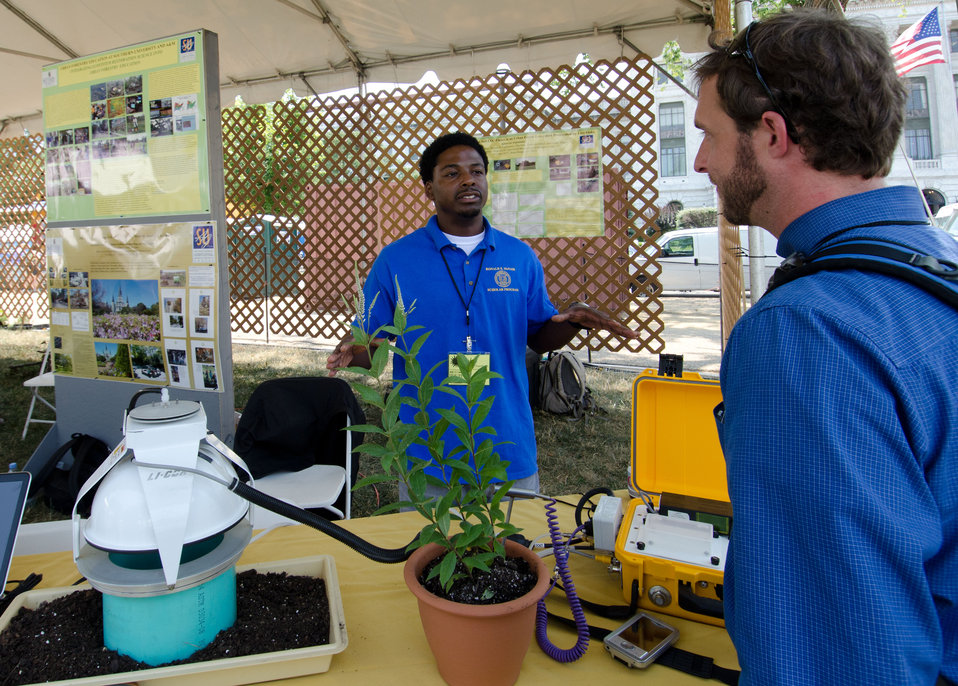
Ronald E. McNair Scholar Program’s Robert Chambers at the 1890’s Historically Black Colleges and Universities tent, talks about the benefits of the Automated Soil CO2 Flux System and how it brings laboratory capabilities to the field, during the 2012 Smithsonian Folklife Festival, Thursday, June 28, 2012 on the National Mall in Washington, D.C. One of the three themes this year is “Campus and Community.” It celebrates the 150 years of the USDA and the Land-Grant University System. The U.S. Department of Agriculture (USDA) and the Land-Grant system extend education across the country, contributing to American agriculture success and rural prosperity. “Campus and Community” has demonstrations, discussions, hands-on activities, and entertainment to that showcase the many ways that this partnership works to improve American agriculture and rural life.